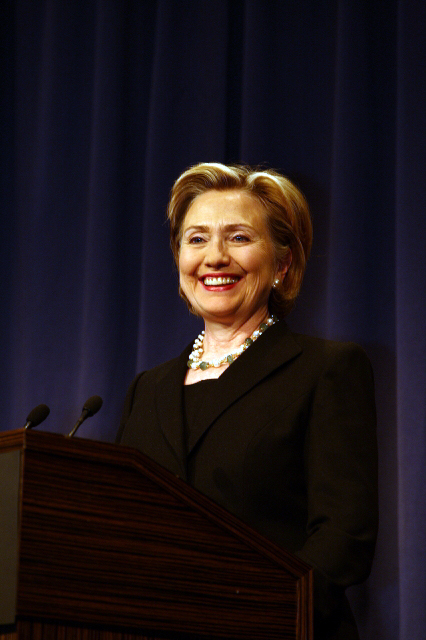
Press Conference With Russian Foreign Minister

Press conference after dinner meeting between U.S. Secretary of State Hillary Rodham Clinton and Russian Foreign Minister Sergey Lavrov in Geneva, Switzerland March 6, 2009.